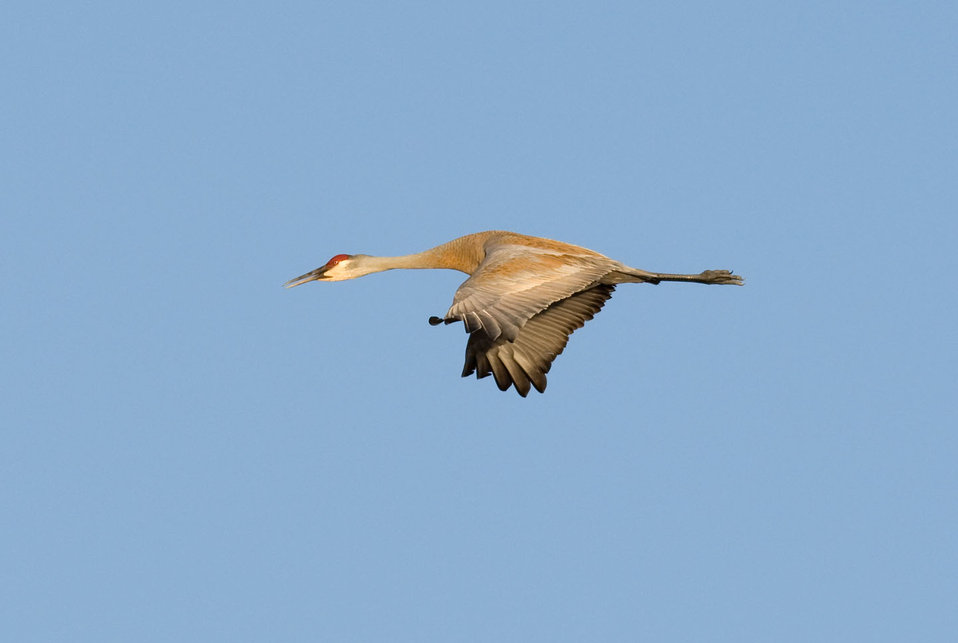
Sandhill Crane in Flight

The lands of the refuge were established to protect and provide habitat for migratory birds that cross State lines and international borders and are by law a Federal trust responsibility.

The refuge is of great value to waterfowl and shorebirds, as well as other migrating water-dependent bird species, because of the diversity of wetland and upland habitats that provide for the diverse life cycle needs of these species.